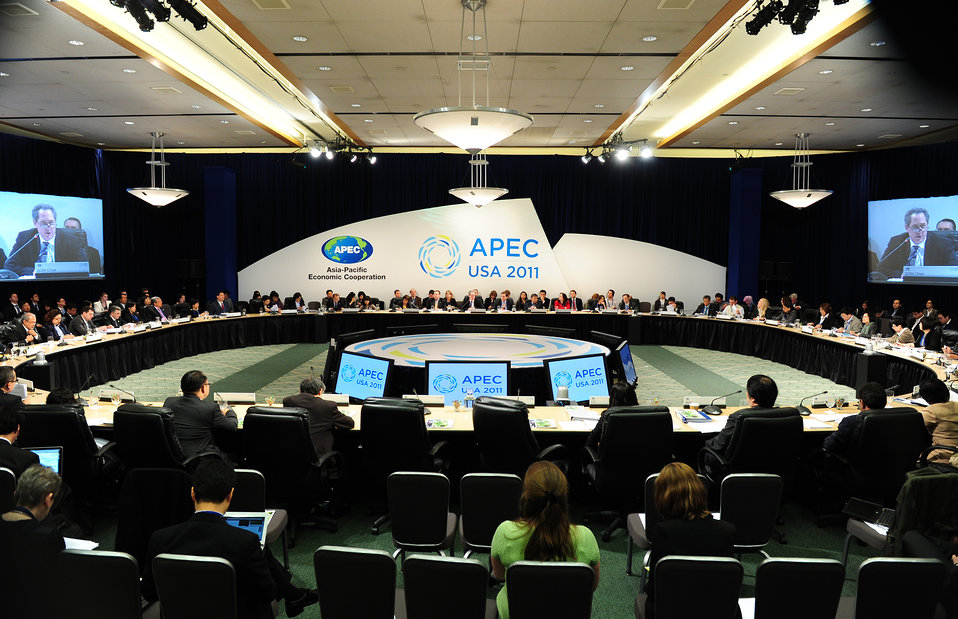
Chair Froman Delivers Remarks

Chair Michael Froman delivers remarks at the open plenary of the Asia Pacific Economic Cooperation (APEC) Senior Officials Meeting (SOM1) in Washington, D.C., on March 11, 2011.